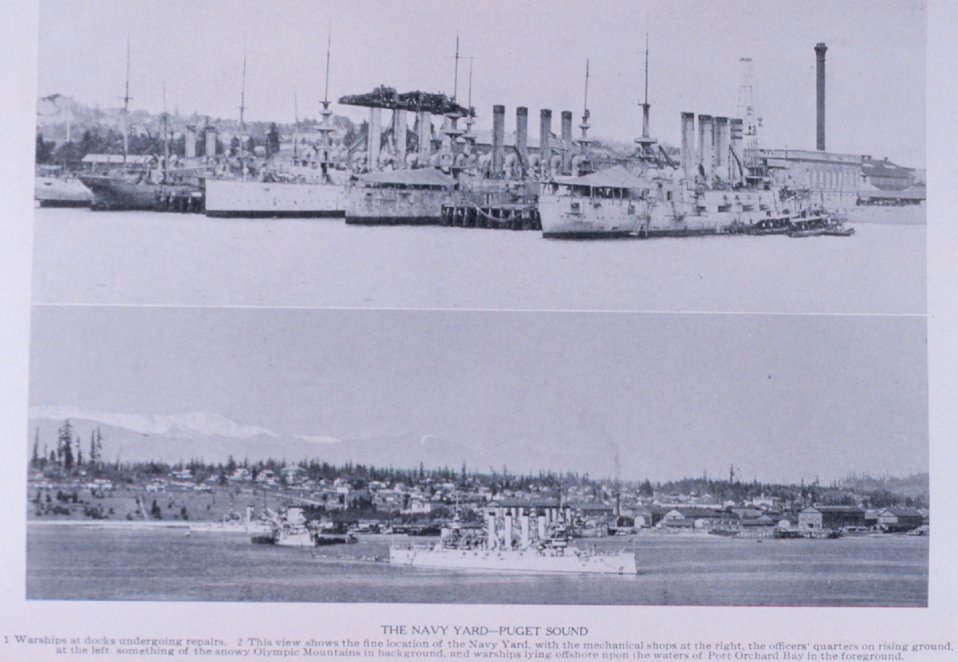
'The Navy Yard - Puget Sound'. In: 'Puget Sound and Western Washington Cities-Towns Scenery', by Robert A. Reid, Robert A. Reid Publisher, Seattle, 1912. P. 142.